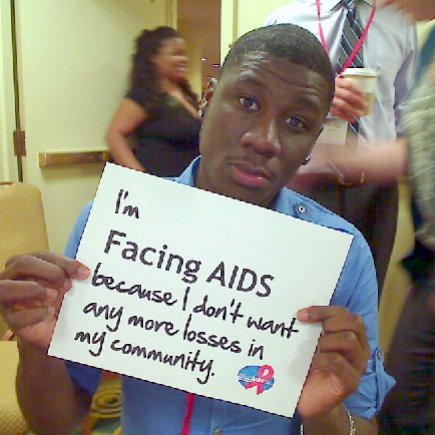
I'm Facing AIDS because I don't want any more losses in my community.